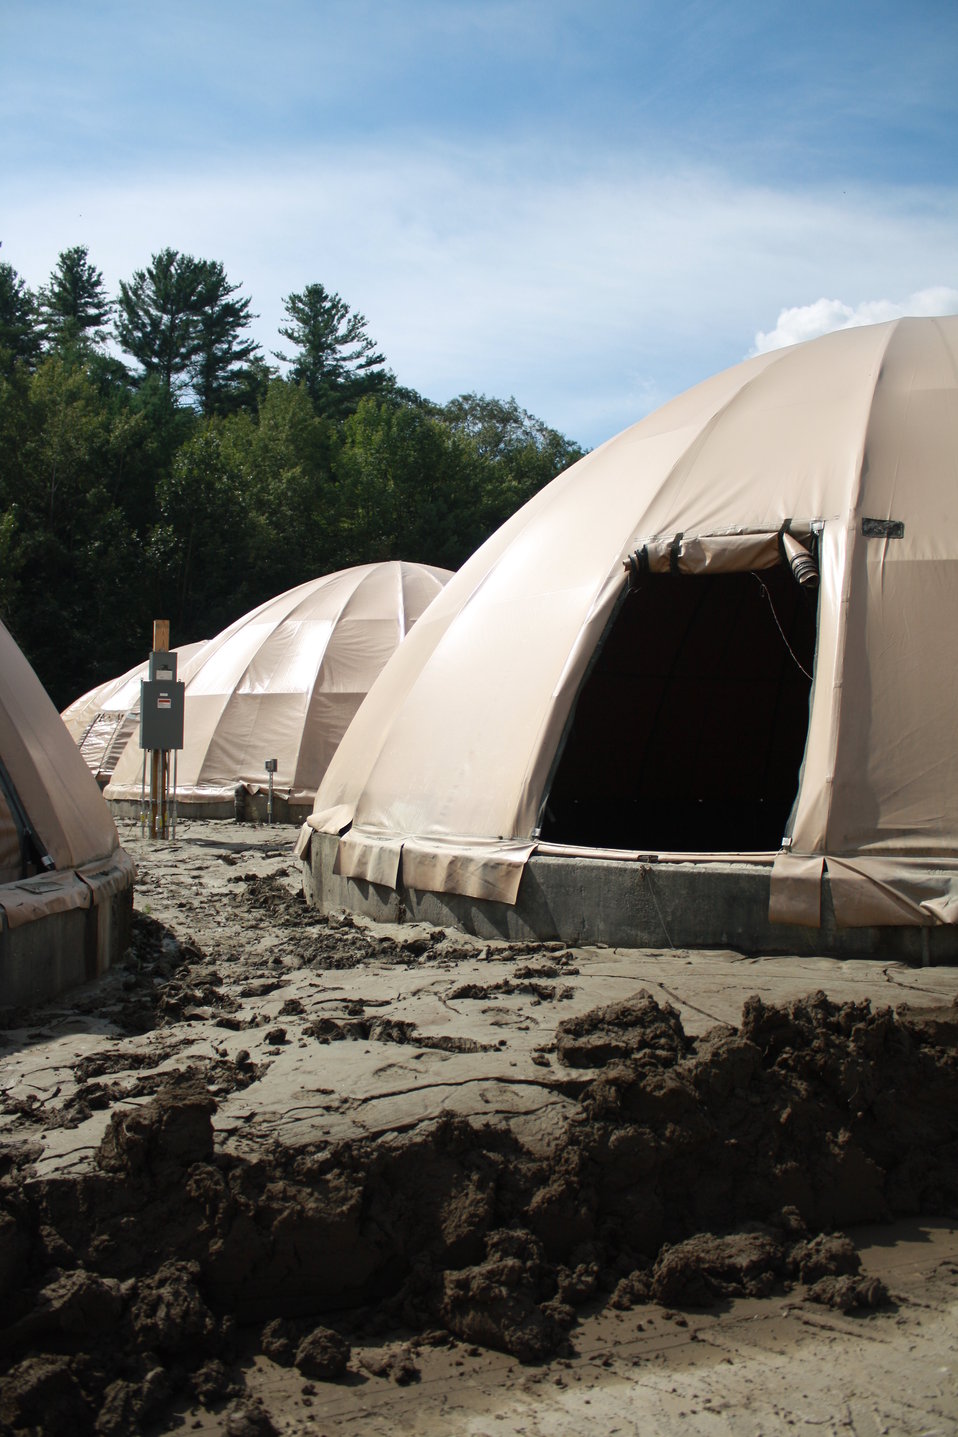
River sediment carried by Hurricane Irene flood waters deposited on White River National Fish Hatchery grounds

Significant amounts of river sediment were deposited on White River National Fish Hatchery grounds during the Hurricane Irene flood event.